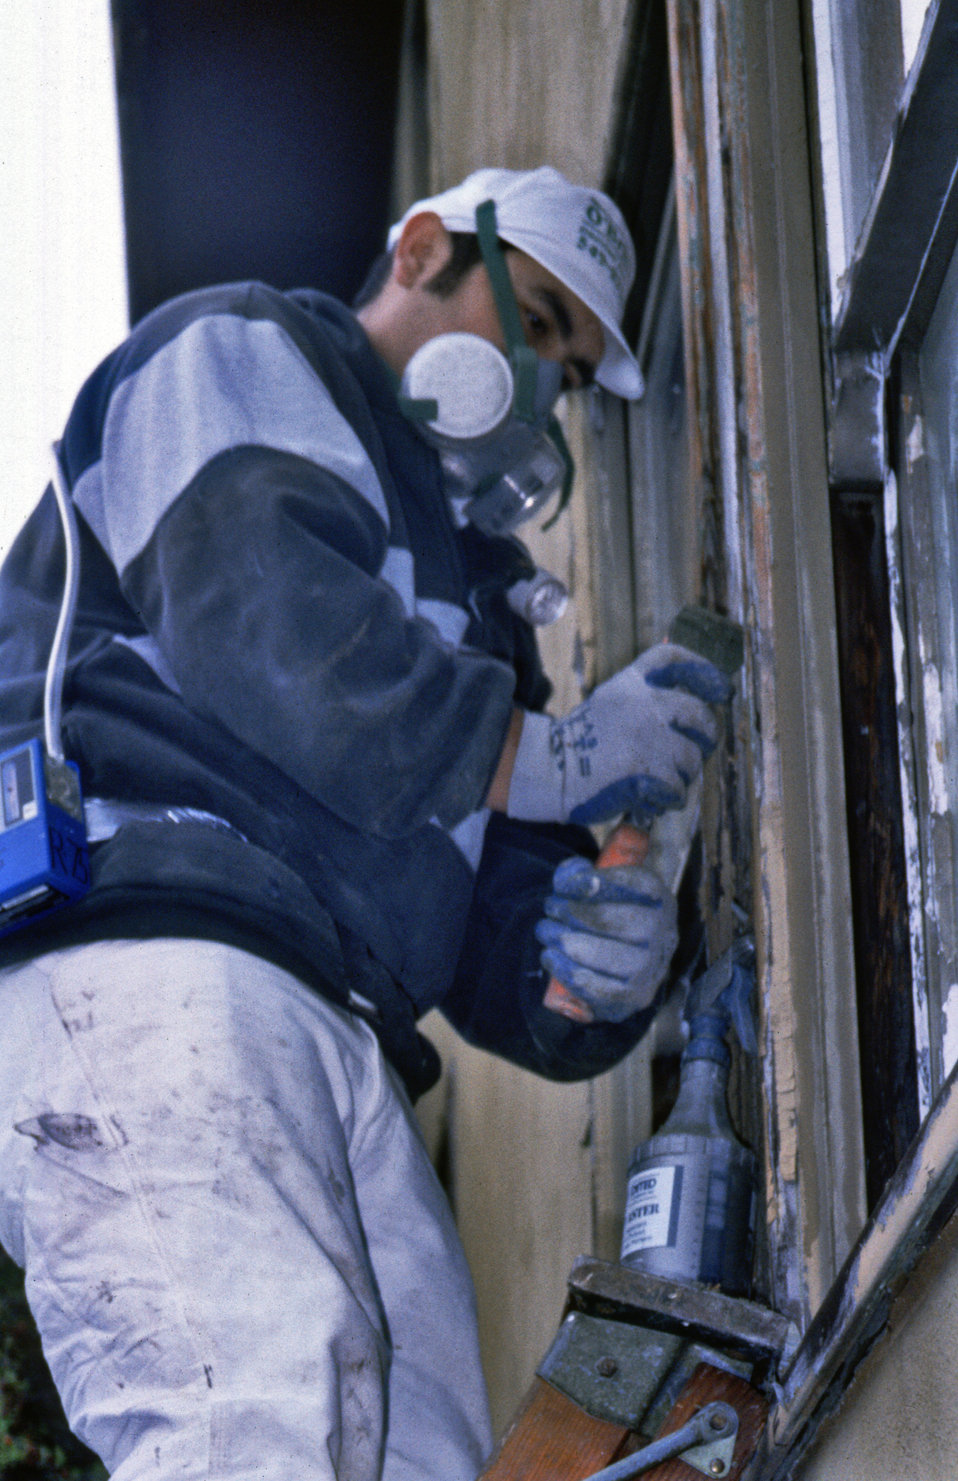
While wearing a protective mask, this worker was performing wet manual paint scraping in a 1999 exercise, demonstrating an exterior renovation method that was typically used on residences where lead-based paint was present. This was a lower-exposure method.